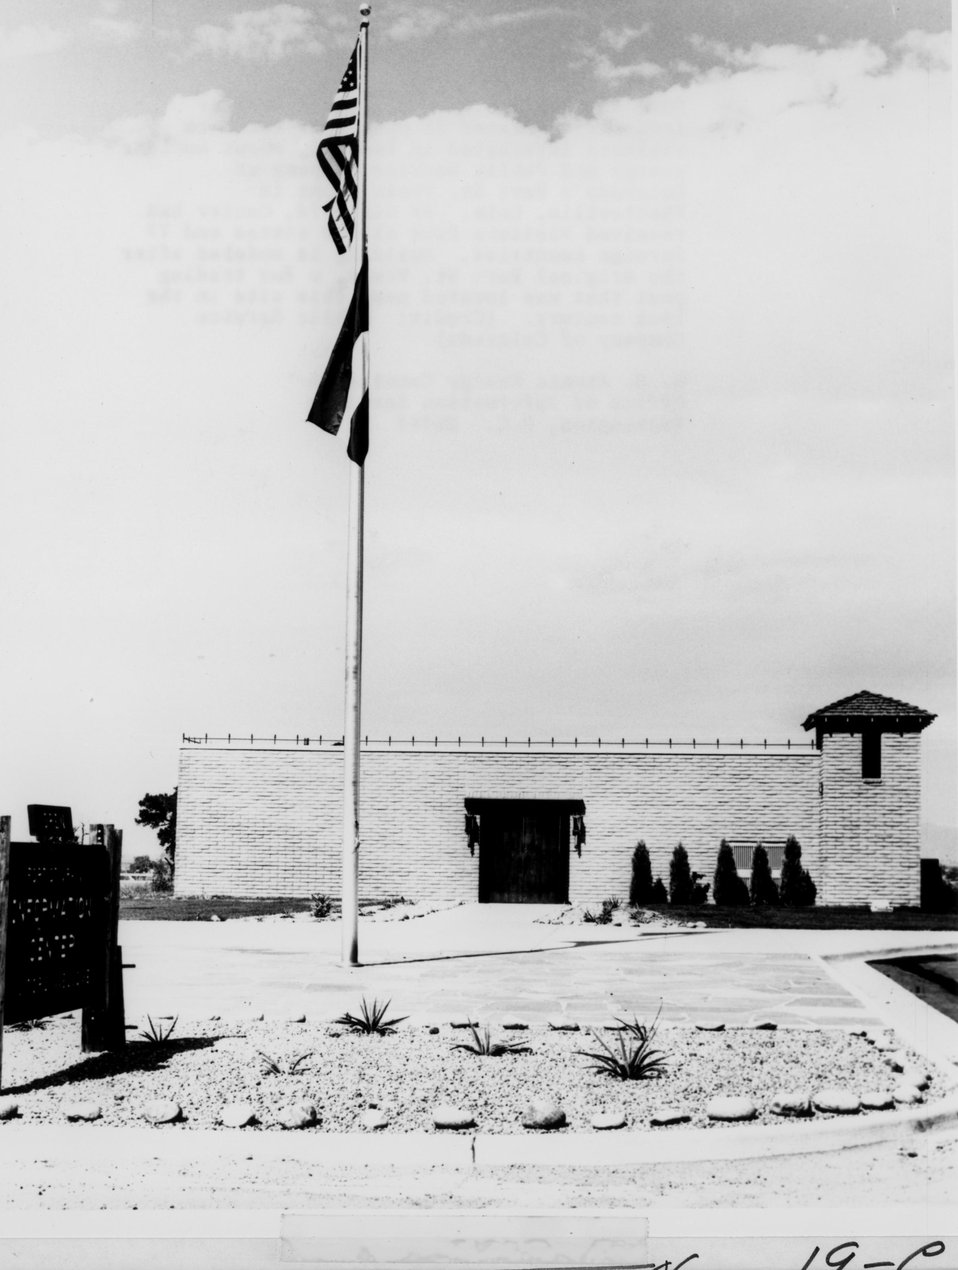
Fort St. Vrain Nuclear Information Center.